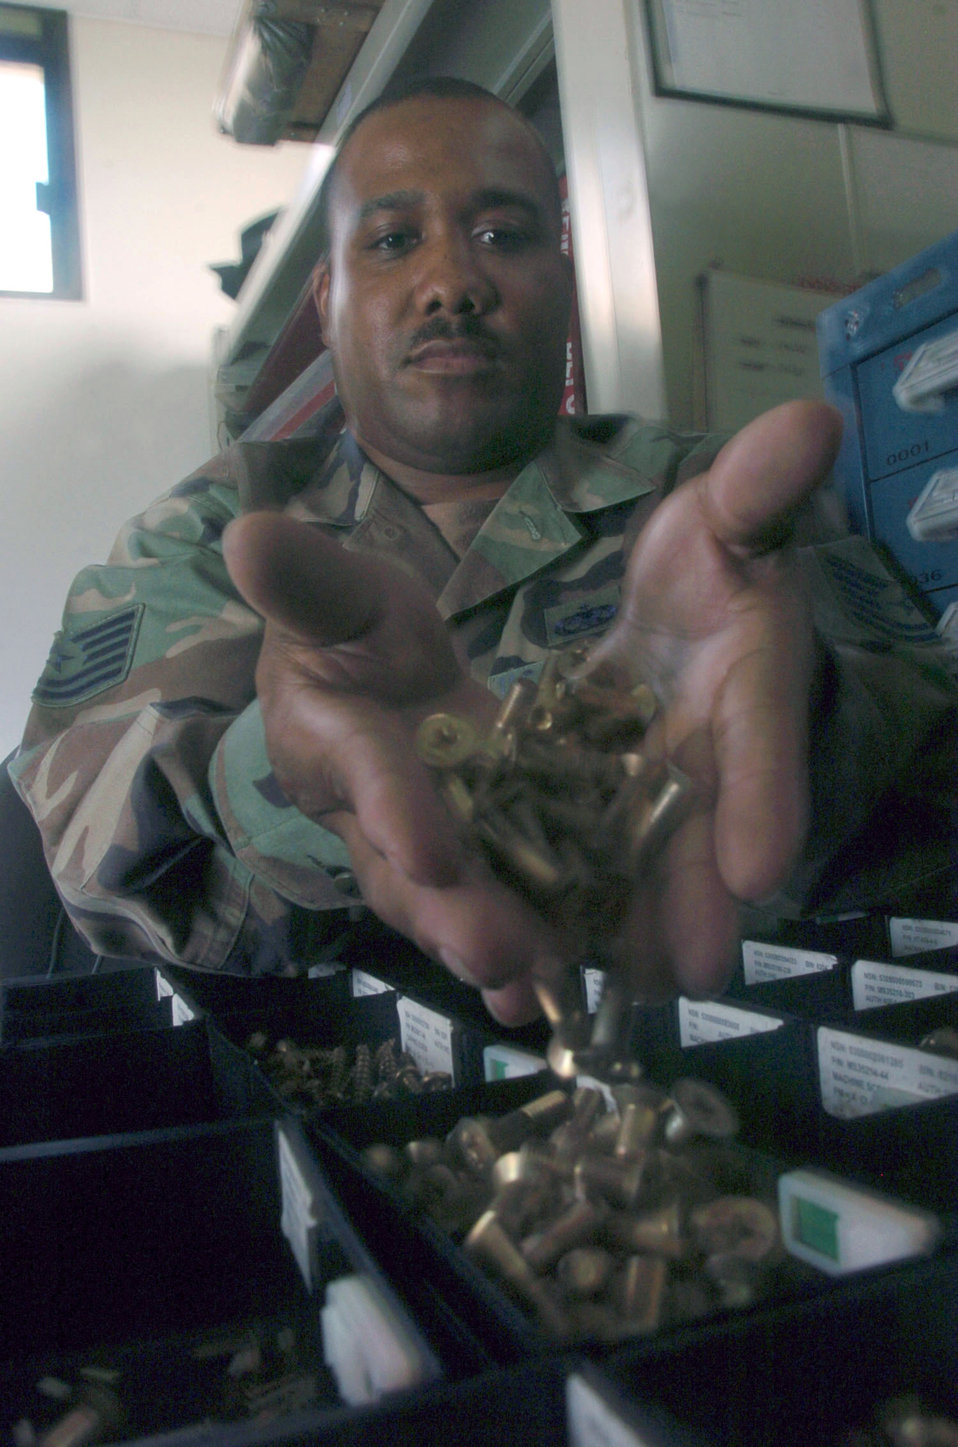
Gotta fix 'em before you fly 'em

KADENA AIR BASE, Japan -- Tech. Sgt. Kenneth Marshall adds bolts to a bench-stock drawer at the consolidated tool kit section. The tool kit Airmen handle about 1,600 bench-stock items, about 200 pieces of equipment and 120 hazardous materials for mechanics who maintain the Special Operations MC-130 Combat Talon and Combat Shadow fleet here. Sergeant Marshall is assigned to the 353rd Maintenance Squadron.